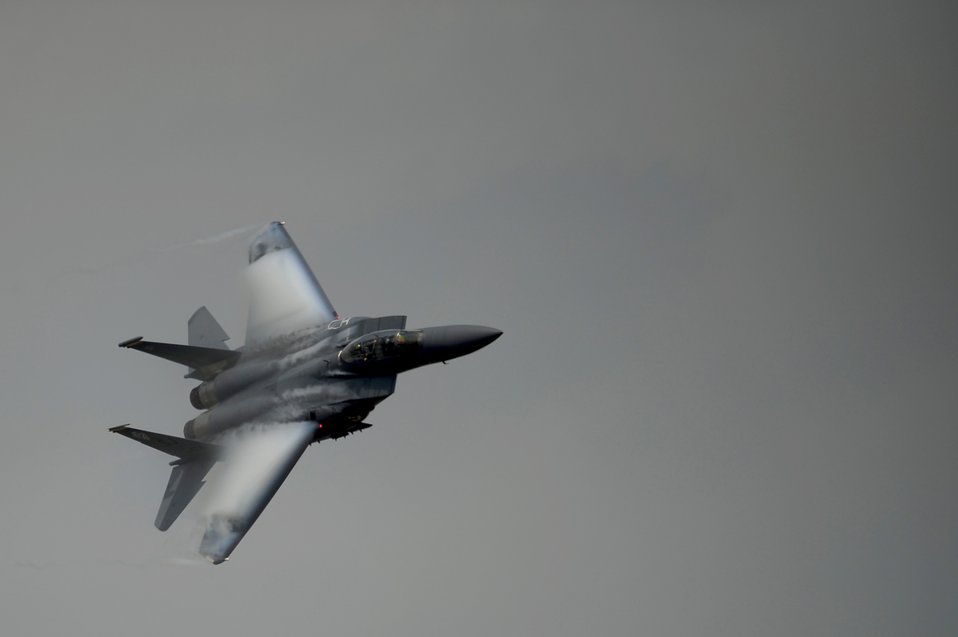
F-15E at Air Expo

An F-15E Strike Eagle pilot demonstrates the aircraft's maneuverability April 9, 2011, during the Charleston Air Expo at Joint Base Charleston S.C. The F-15E is a multirole fighter capable of air-to-surface and air-to-air combat.